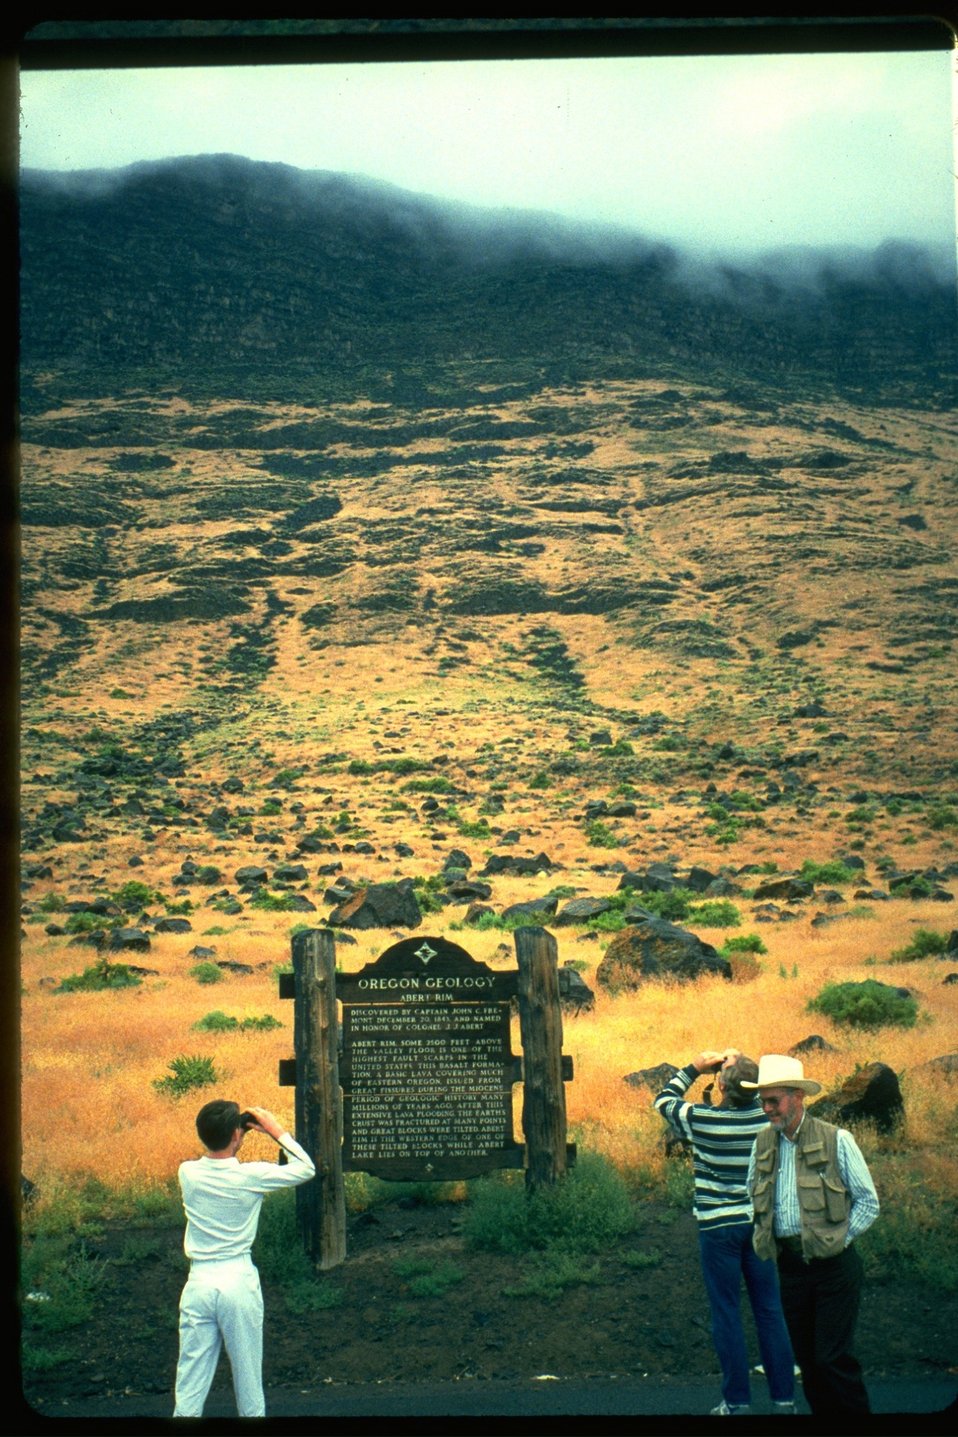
State Historical sign/marker reading "Oregon Geology: Abert Rim.